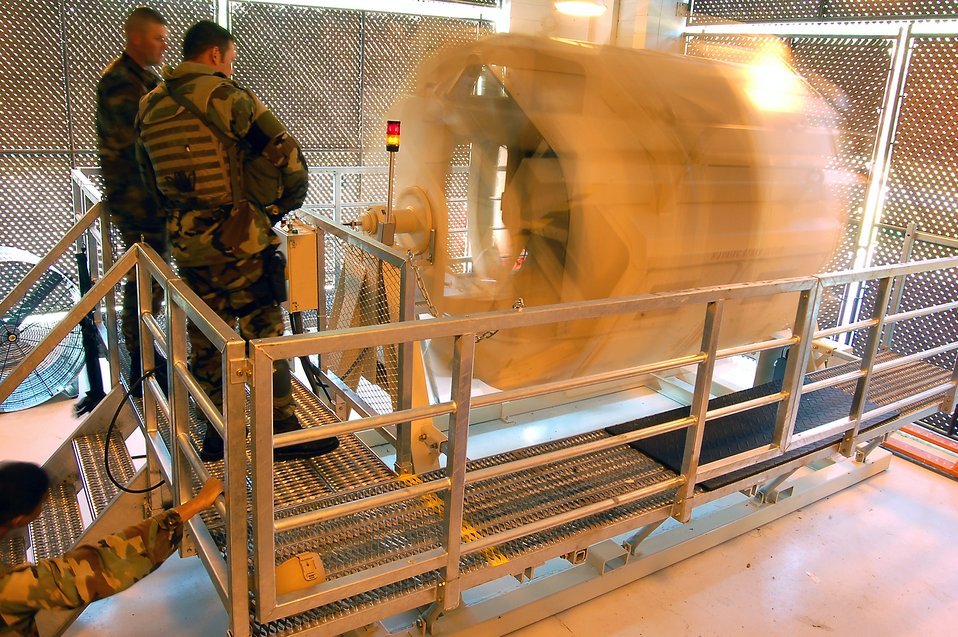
Rollover trainer turns up the HEAT on safety

Several security forces Airmen observe fellow Airmen training in the new Humvee Egress Assistance Trainer, or HEAT, at the 820th Security Forces Group Training and Technology Center at Moody Air Force Base, Ga. The HEAT realistically simulates a vehicle rollover, allowing crew members to prepare for such a crisis in a safe environment.